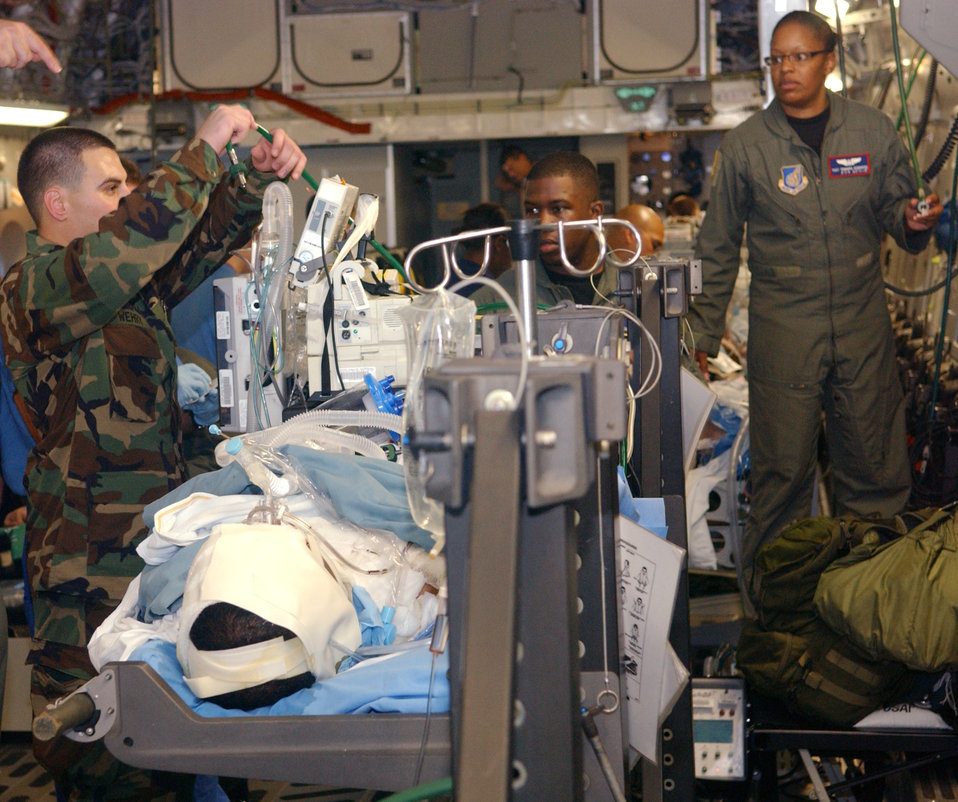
Medical assistance

Members from the 36th Wing and 18th Wing stabilize six Sailors on a C-17 Globemaster III Dec. 2 at Andersen Air Force Base, Guam before their onward flight to Hickam AFB, Hawaii. The Sailors were injured when a steam line ruptured in the engineering room of the USS Frank Cable in Guam.